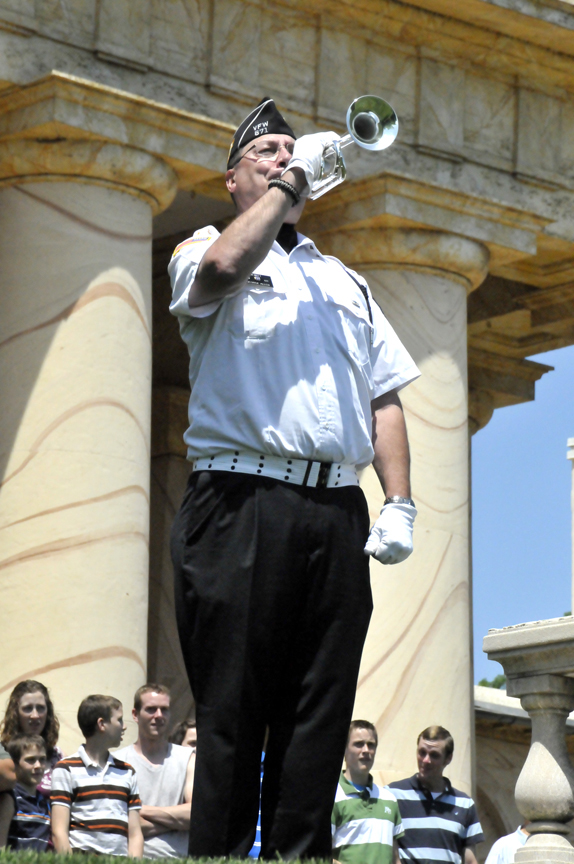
150th anniversary of taps

Overlooking Arlington National Cemetery and Washington, D.C., bugler George Allen of DeWitt, Mich. plays the bugle call taps in front of Arlington House May 19, 2012. Allen was part of a 200-person collective rendition of taps which was played at noon throughout the cemetery.